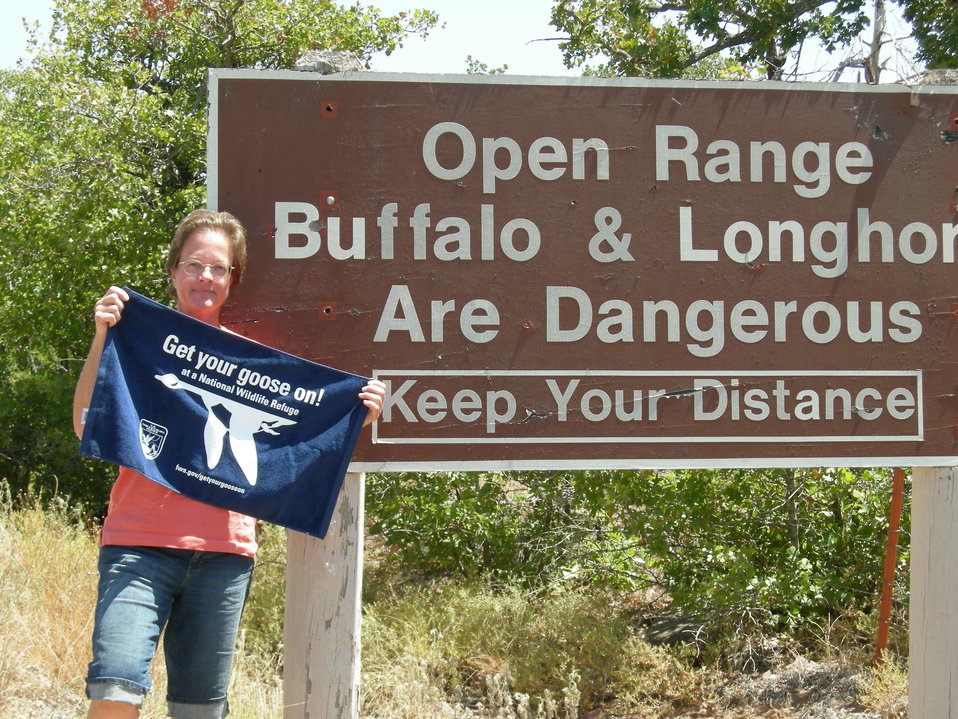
Get Your Goose On!

Wichita Mountains National Wildlife Refuge in Oklahoma.